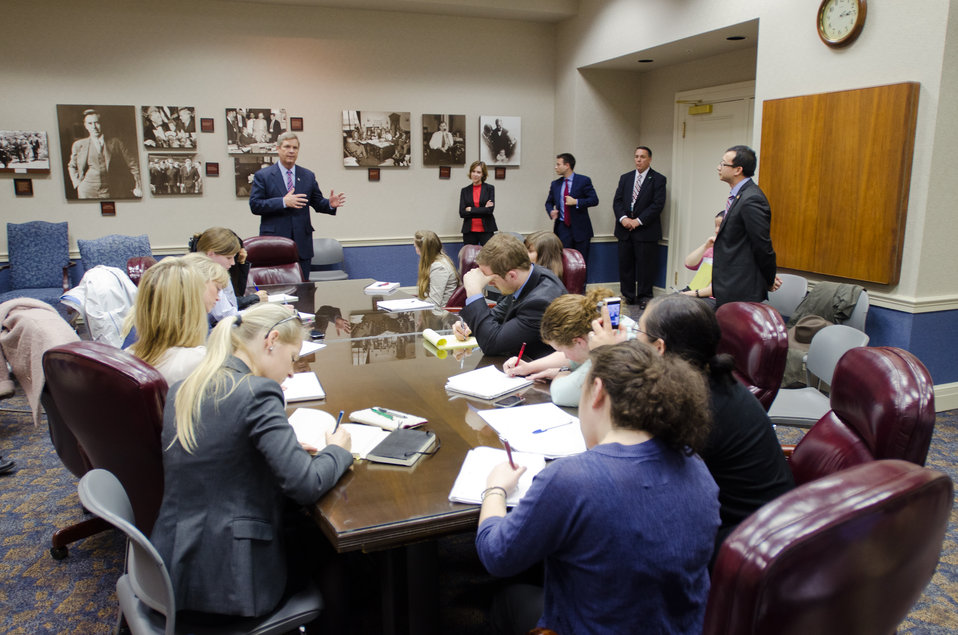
U.S. Department of Agriculture (USDA) Secretary Tom Vilsack speaks with American University students, about what is the USDA's definition of a farm, to the importance of food producers supporting each other to feed the future world population, and several other topics facing the USDA. The visit took place in Washington, DC, on Wednesday March 23, 2011. The students were here to learn about Foreign Agriculture Service and the international role of the USDA.